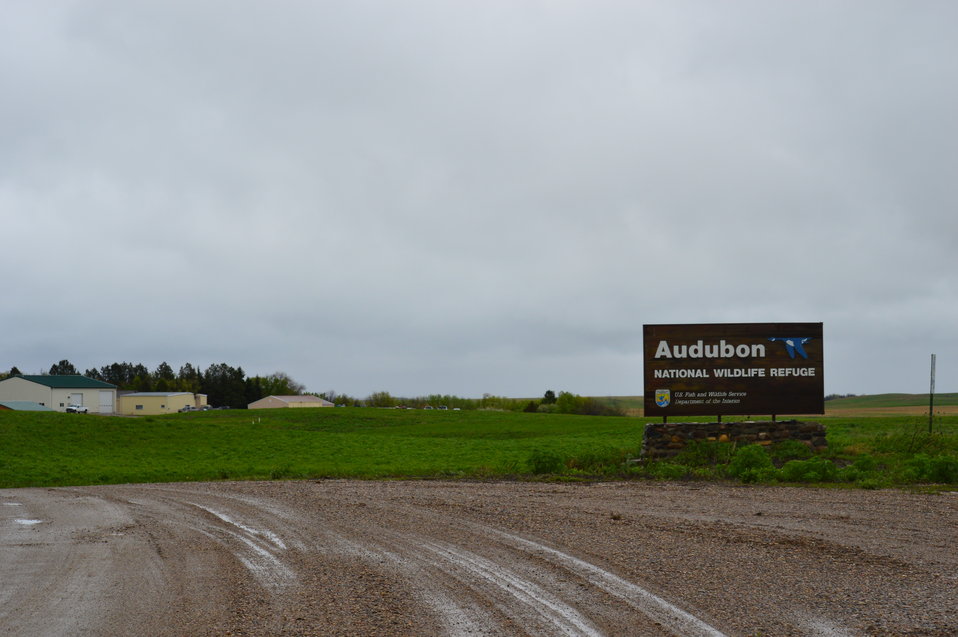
Audubon NWR sign at entrance

Scenery and wildlife and Audubon National Wildlife Refuge in North Dakota.